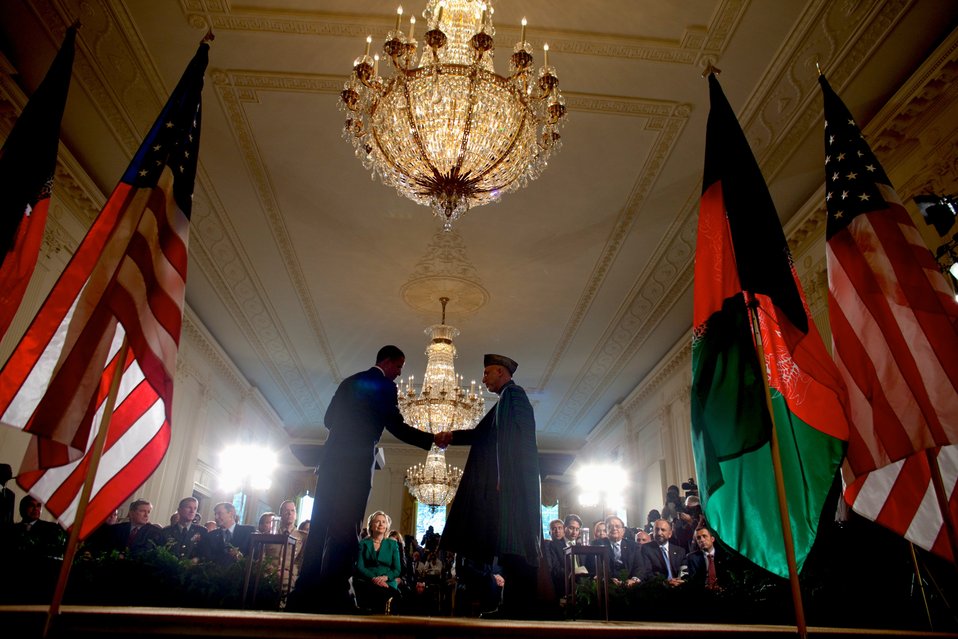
President Obama and Afghan President Karzai Shake Hands

President Barack Obama and Afghanistan President Hamid Karzai hold a joint press conference in the East Room of the White House in Washington, D.C., May 12, 2010.